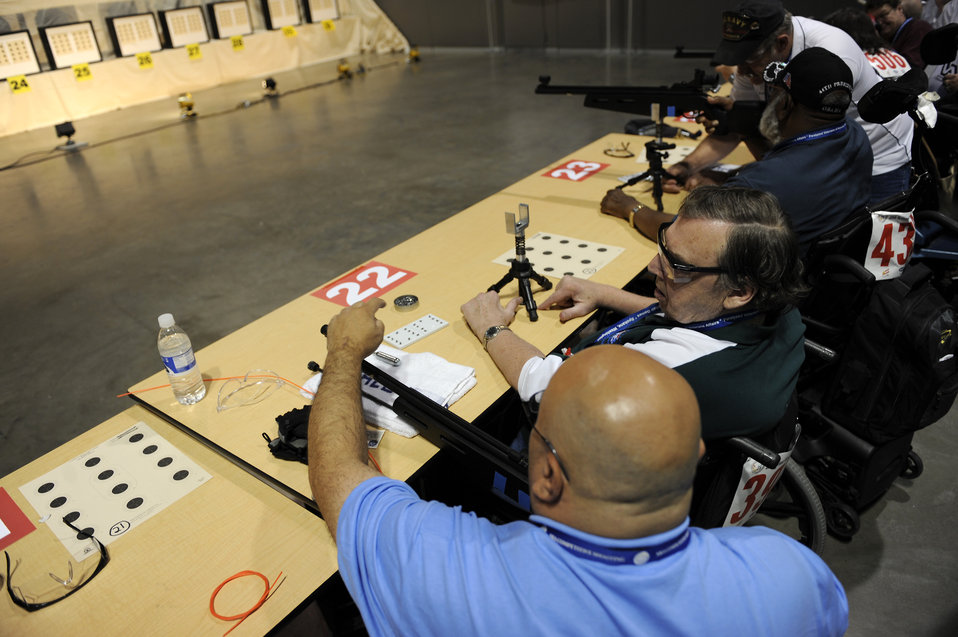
Wheelchair athletes participate in wheelchair games

William Ethridge gets assistance from a volunteer as he competes in the air gun competition Jul. 14 during the 29th National Veterans Wheelchair Games in Spokane, Wash. Ethridge is an Air Force veteran and resides in Spokane, Wash. The 29th National Veterans Wheelchair Games runs through Jul. 19.